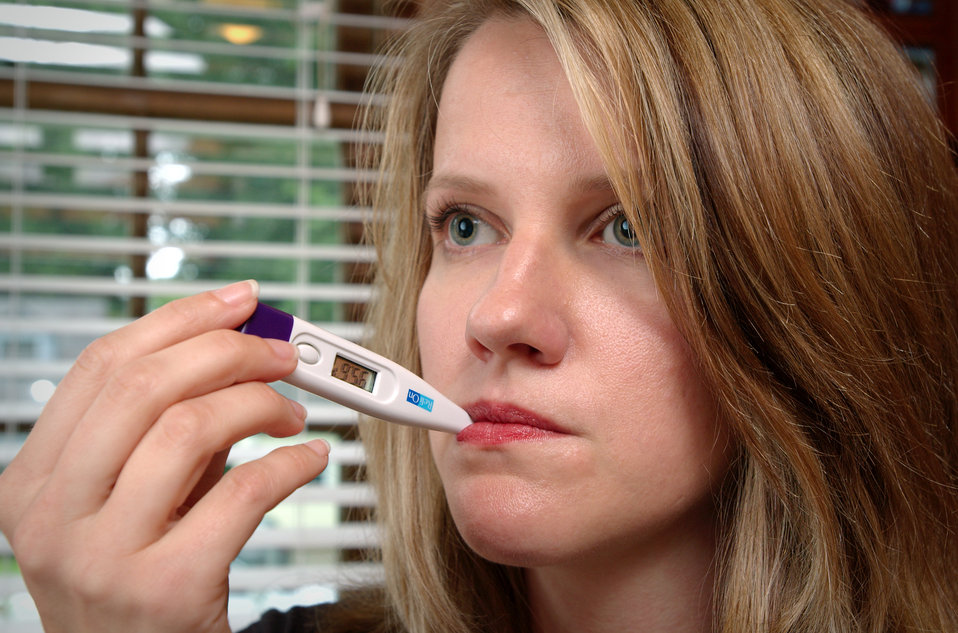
Woman taking temperature

This photograph depicted a woman who was using a modern, battery-powered oral thermometer, in order to measure her body temperature. In order to return an accurate reading, this particular type of thermometer needed to be placed beneath the user's tongue, for a set amount of time, beeping when the ambient, sublingual temperature was reached.